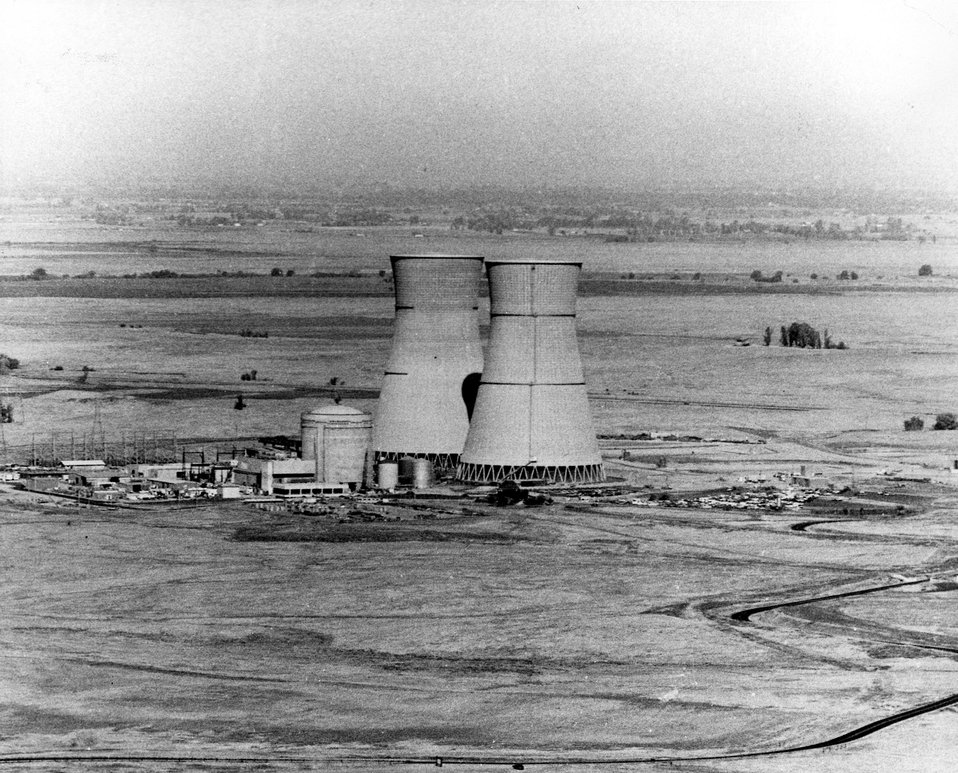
Rancho Seco Nuclear Generating Station Unit 1 near Clay Station, California. The Sacramento Municipal Utility District's generating station employs Babcock & Wikcox pressurized water reactor and will generate 913,000 Kw electric. Circa 1974.